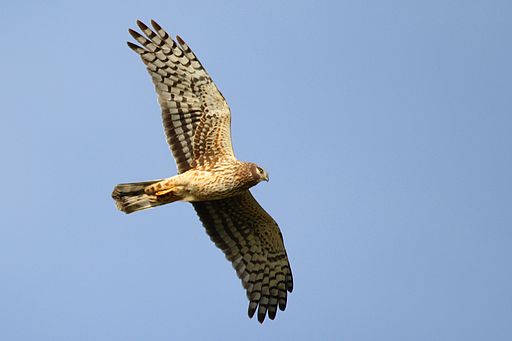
Northern harrier

photo from WikimediaCommons